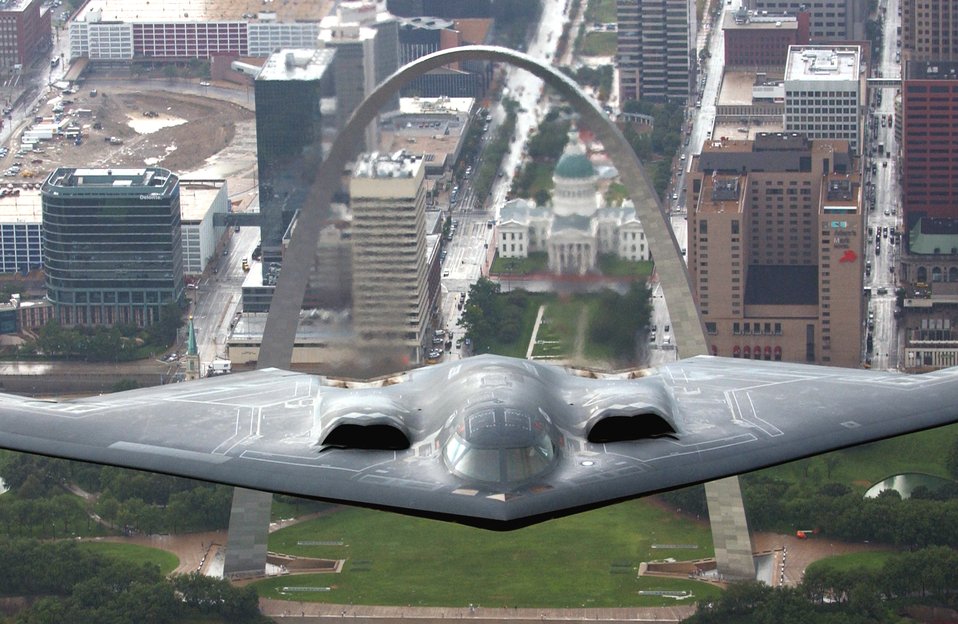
B-2 Spirit flies over St. Louis

A B-2 Stealth bomber from the 509th Bomb Wing at Whiteman Air Force Base, Mo., flies over the St. Louis Arch on Aug. 10, 2006. The B-2 flyover was one of several events celebrating Air Force Week in St. Louis.